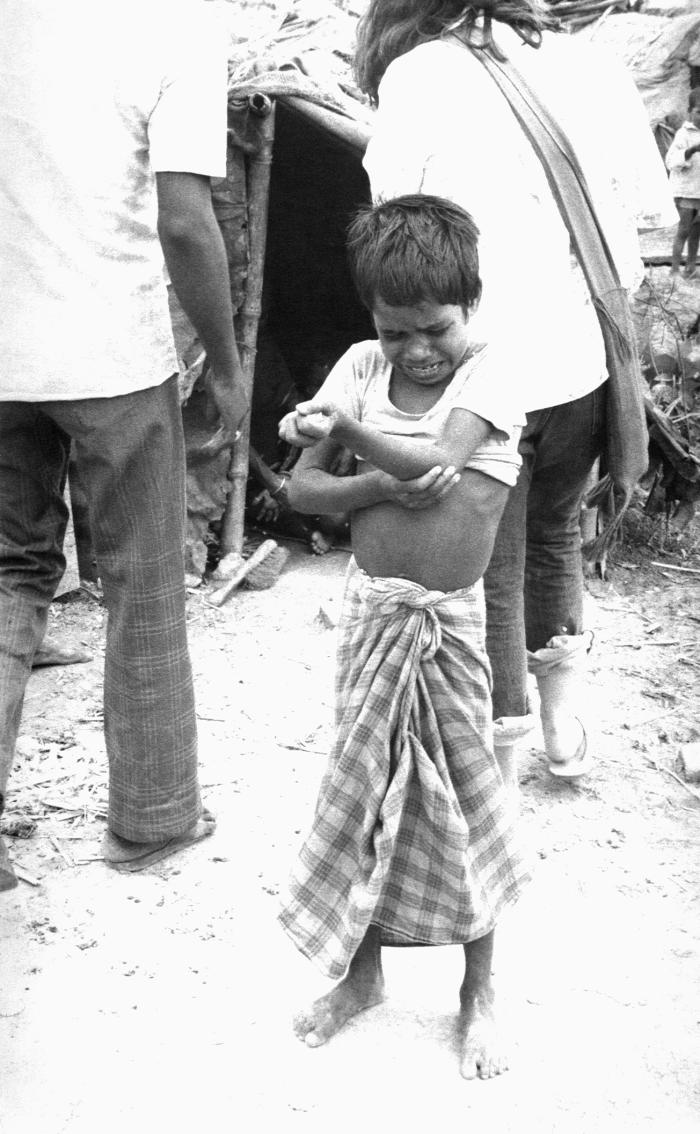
The smallpox vaccination is, for the most part, rather 'non-invasive'. The vaccine is not given with a hypodermic needle, but merely involves a pricking of the skin, a number of times in a few seconds, with a bifurcated, two-prong needle. The bifurcated needle is dipped into the vaccine solution, and when it's removed, the needle retains a droplet of the vaccine. The pricking is not deep, but it will cause a sore spot, and one or two droplets of blood to form. The vaccine usually is given in the upper arm, but may be given in a forearm region. This boy was emotionally demonstrative after having received his left forearm vaccination.